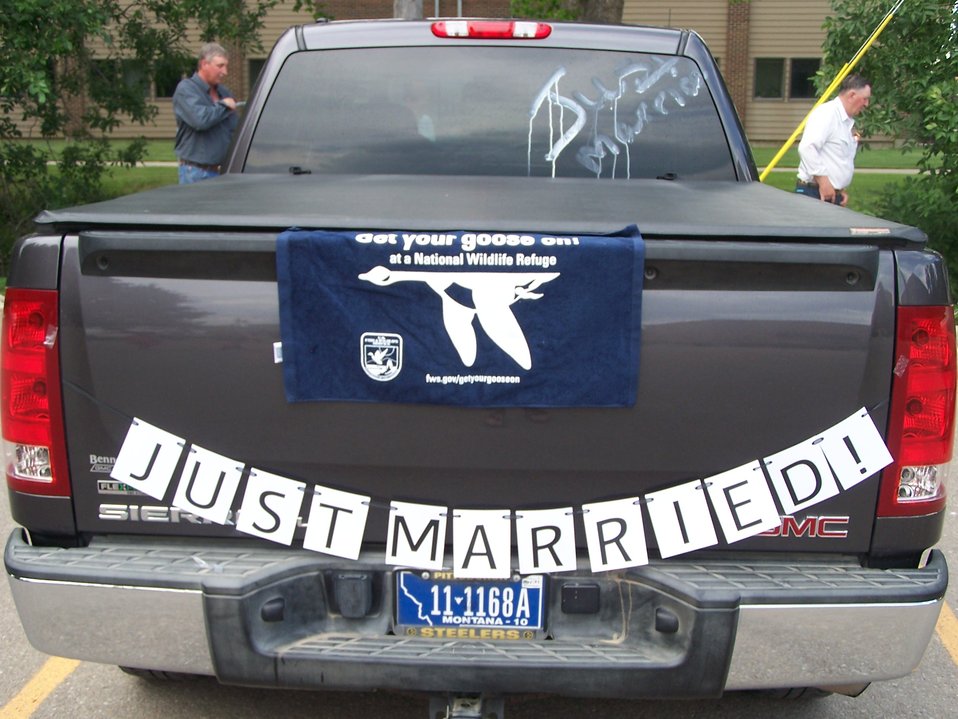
Get Your Goose On! - Holy Matrimony Style

Bowdoin's Fire Management Specialist Jim Forsythe, has his pickup Gets Its Goose On after just being married